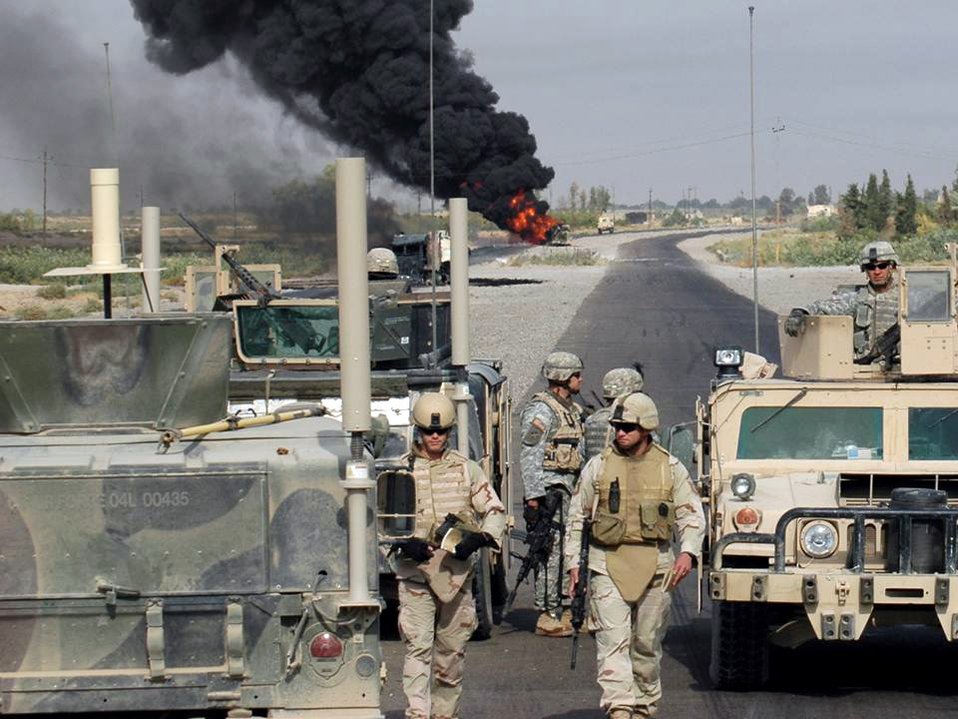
Convoy operations

Waiting for explosive ordnance disposal to confirm the scene is safe, Staff Sgt. Christopher Hawks (left) and Master Sgt. Albert Schneider (right) prepare to collect evidence and obtain pictures in Iraq. Sergeant Schneider's weapons intelligence team had just arrived at the scene of two improvised explosive devices detonations targeting.